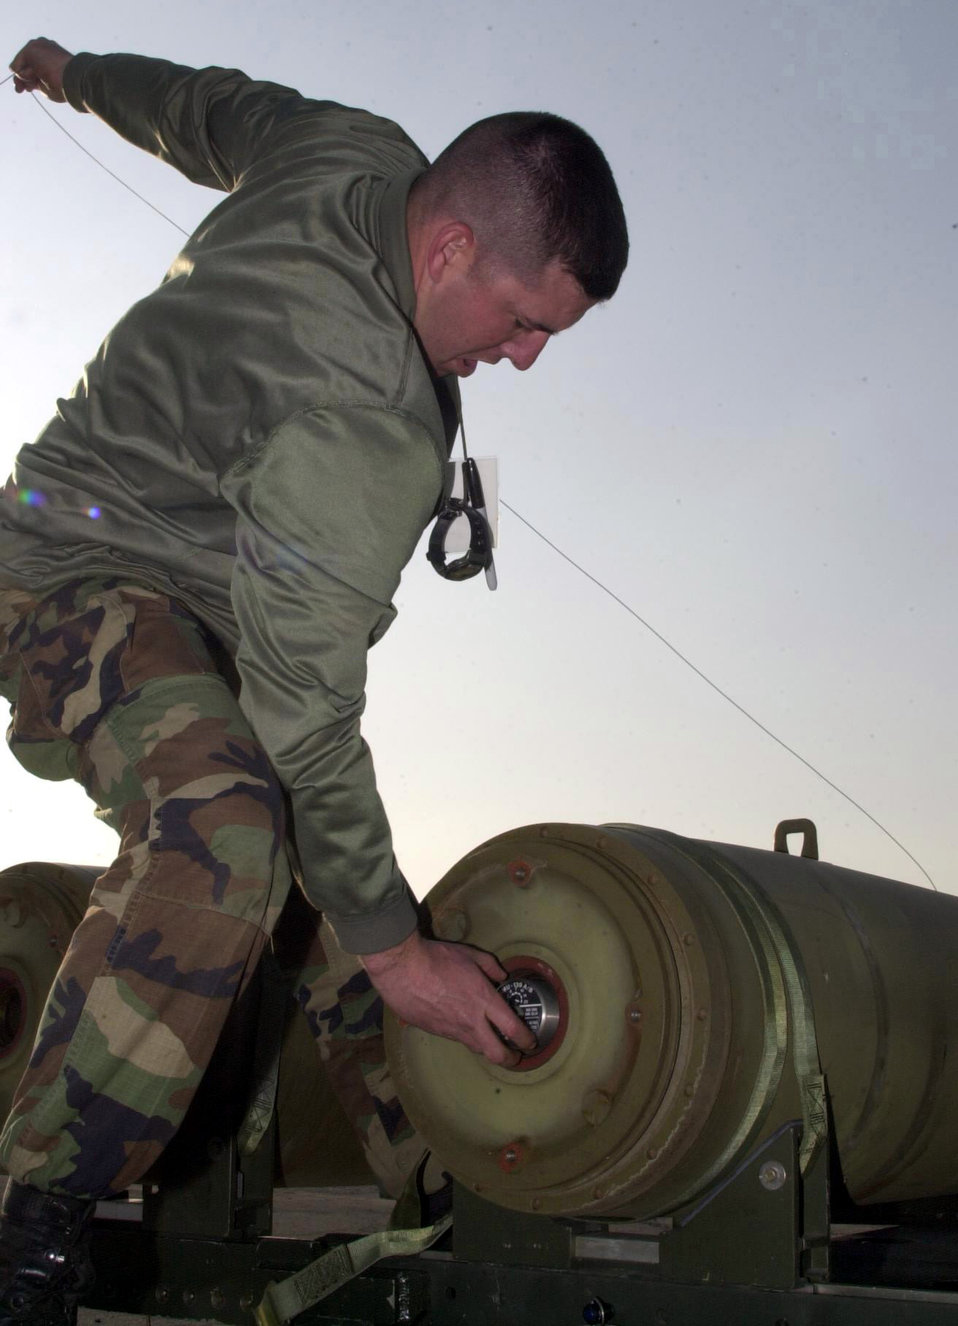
Sutton

OPERATION IRAQI FEEDOM - Tech. Sgt. James Sutton, 5th Expeditionary Maintenance Squadron Munitions Flight, fuzes an MK-84